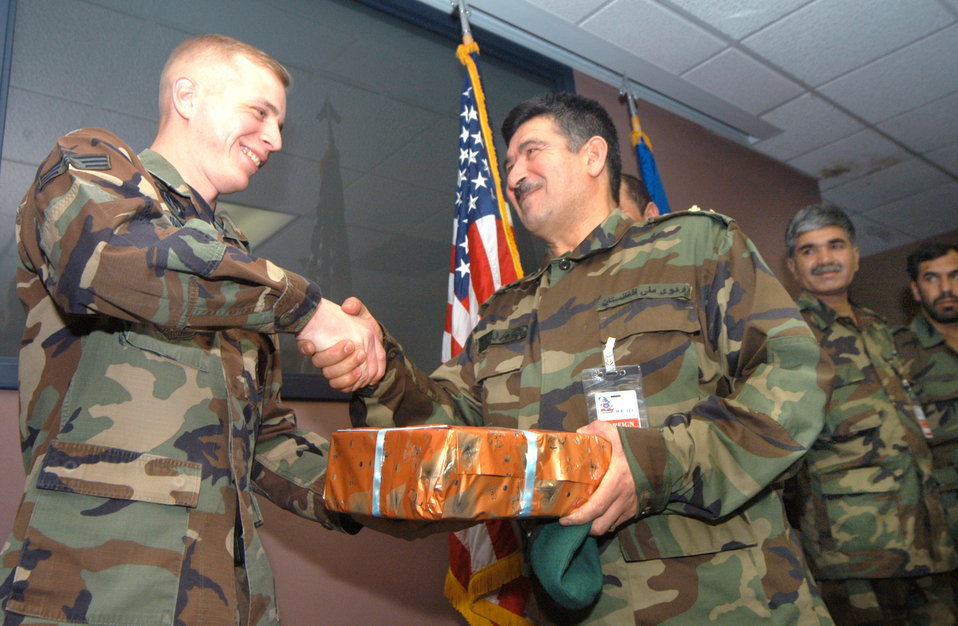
Afghan generals praise contributions of Robins Airman

ROBINS AIR FORCE BASE, Ga. -- Senior Airman Jason Lindgren accepts a gift from Afghan Brig. Gen. Baba Mirza and other Afghan officers here March 11. Airman Lindgren is a 78th Communications Squadron computer networking specialist, and he helped establish a computer network system for the Afghan military.